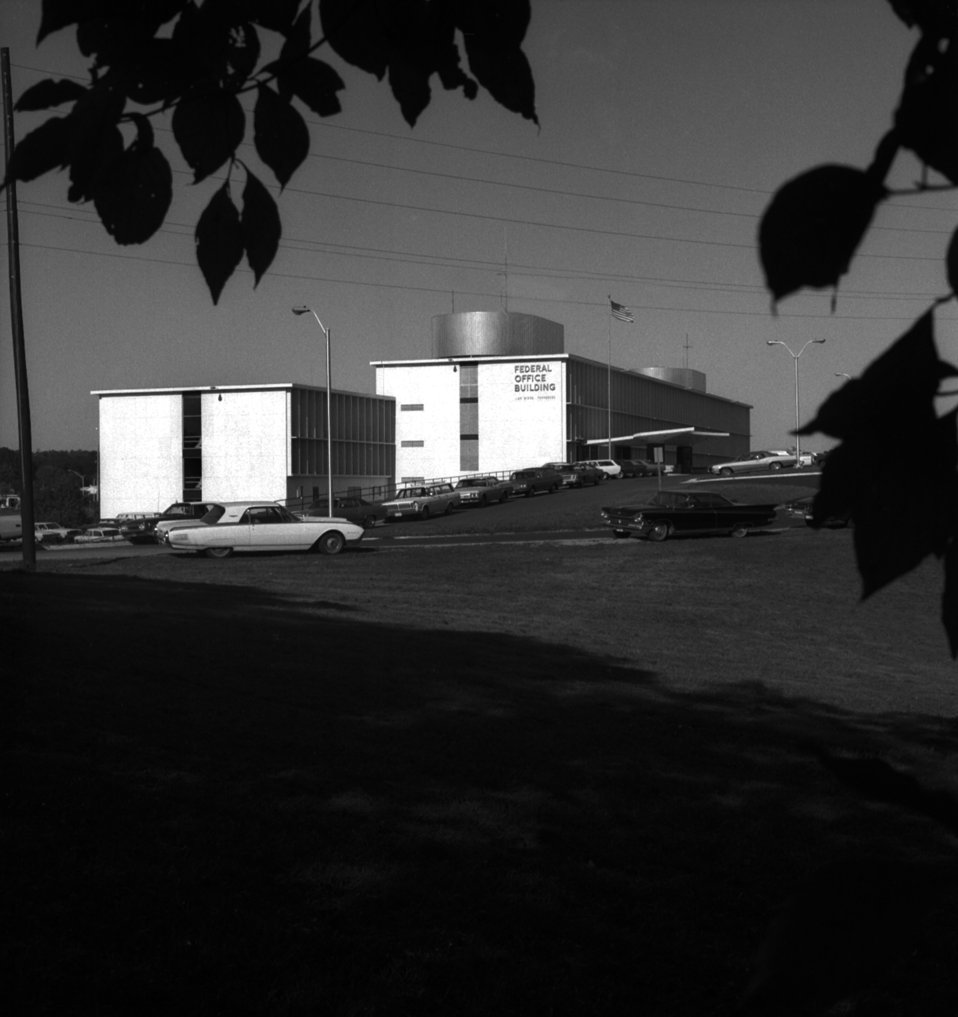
Federal Office Bldg. in Oak Ridge

70-264a DOE photo by Frank Hoffman Oak Ridge Tennessee Sept. 1970